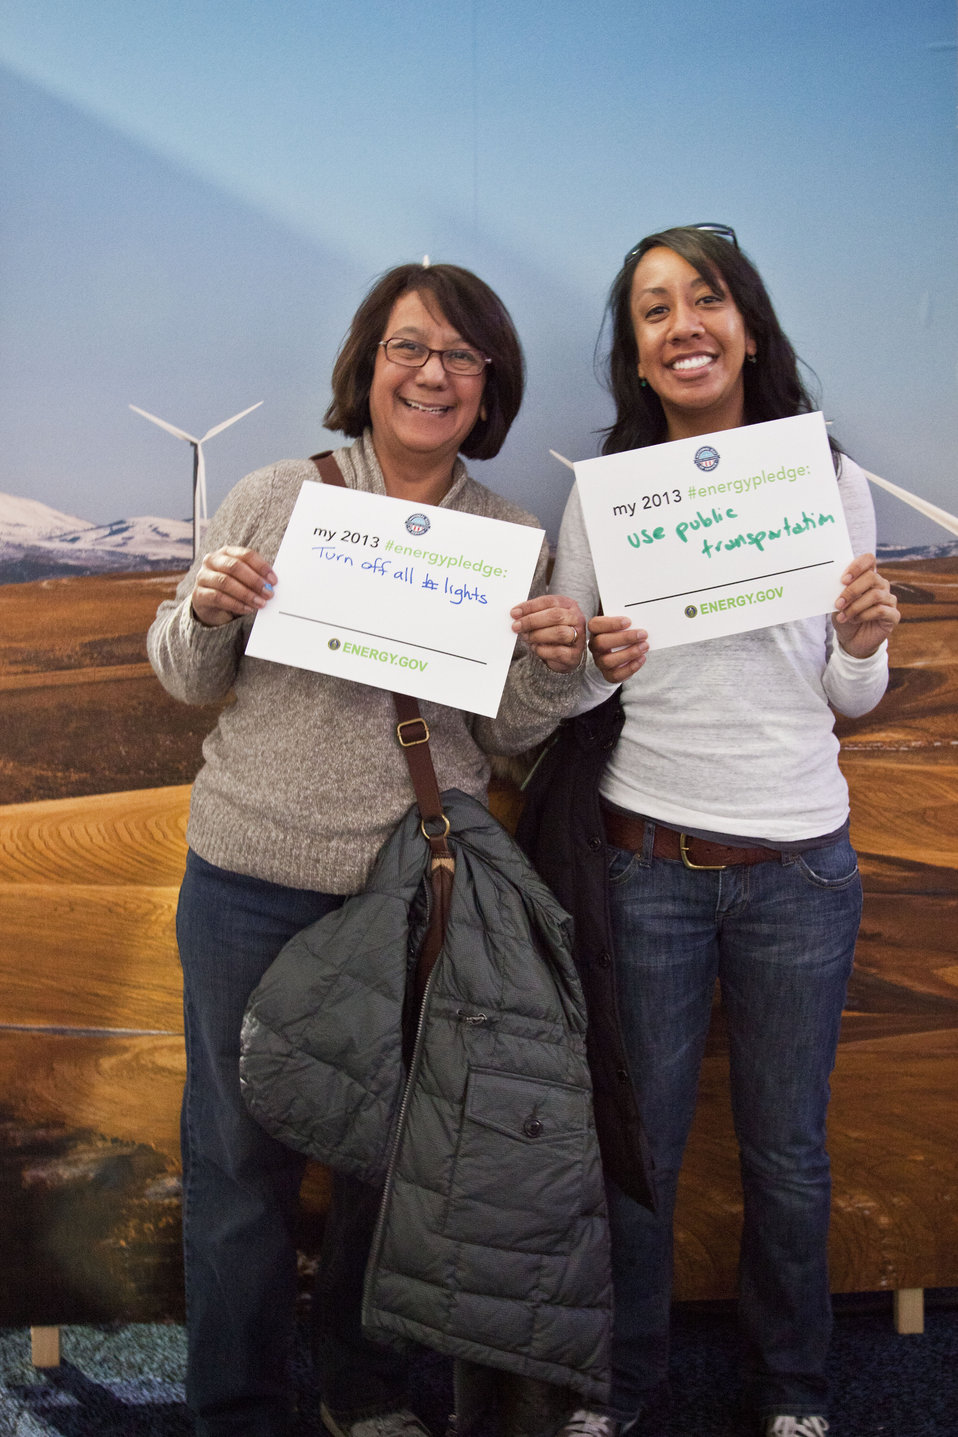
What's your #energypledge?